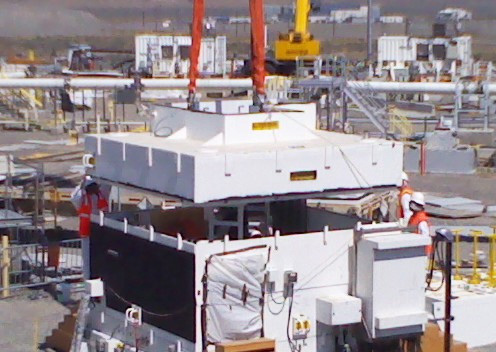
Tank C-107 MARS Sluicing Containment Box

The system interface tie ins and construction acceptance testing for the Mobile Arm Retrieval System (MARS) Sluicing model has been successfully completed. Work began immediately on the Operational Acceptance Testing and operations are scheduled to begin in September. Additional work is underway on a new exhauster which will support the MARS/C-107 retrieval operations.

MARS is a new generation of robotic arm that offers potential to increase the efficiency of waste removal from Hanford's single-shell tanks. The arm has both high and low-pressure water nozzles that enable it to mobilize difficult waste forms such as salt cake and sludges that build up at the bottom of the tanks.